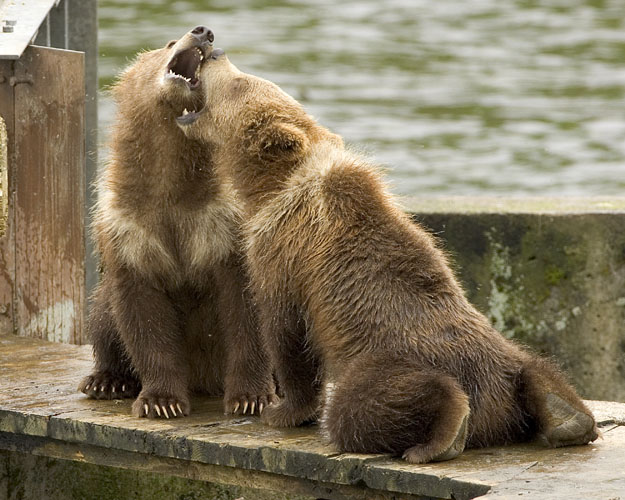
KOD Hildebrand (47)

Kodiak National Wildlife Refuge- Wildlife